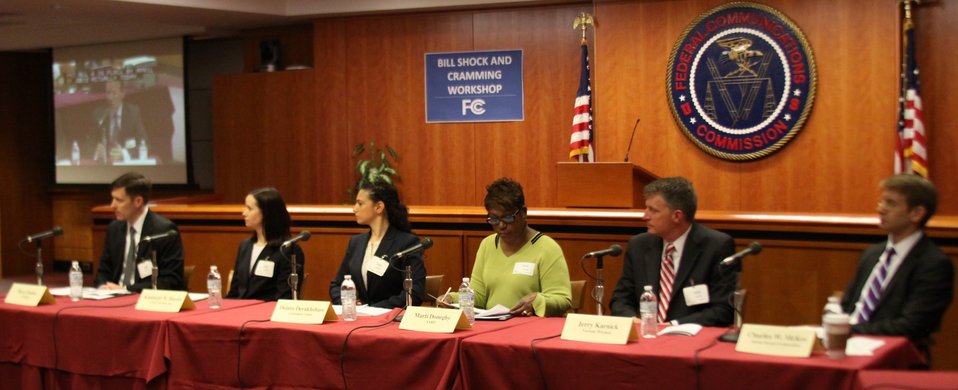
April 17, 2013 Bill Shock and Cramming Workshop Panel: Bill Shock - What Consumers Can Do To Protect Themselves, Industry Efforts